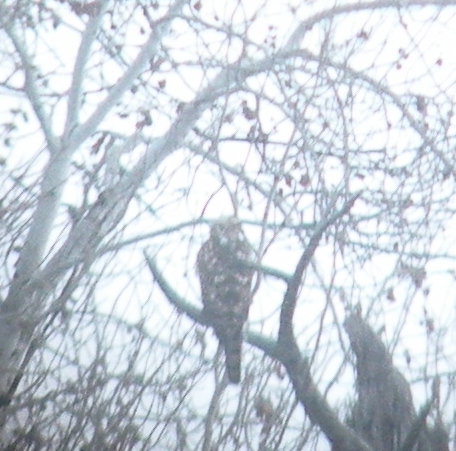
Northern Goshawk

A digiscoped image (not great quality) of this bird perched in a tree after gliding by us. We saw this powerful accipiter early in the day during the Stevensville Christmas Bird Count. The Refuge found 45 species...enough different ones (it's hoped) for our count to maintain #1 ranking for Montana Christmas Bird Counters (CBC) at Lee Metcalf National Wildlife Refuge.